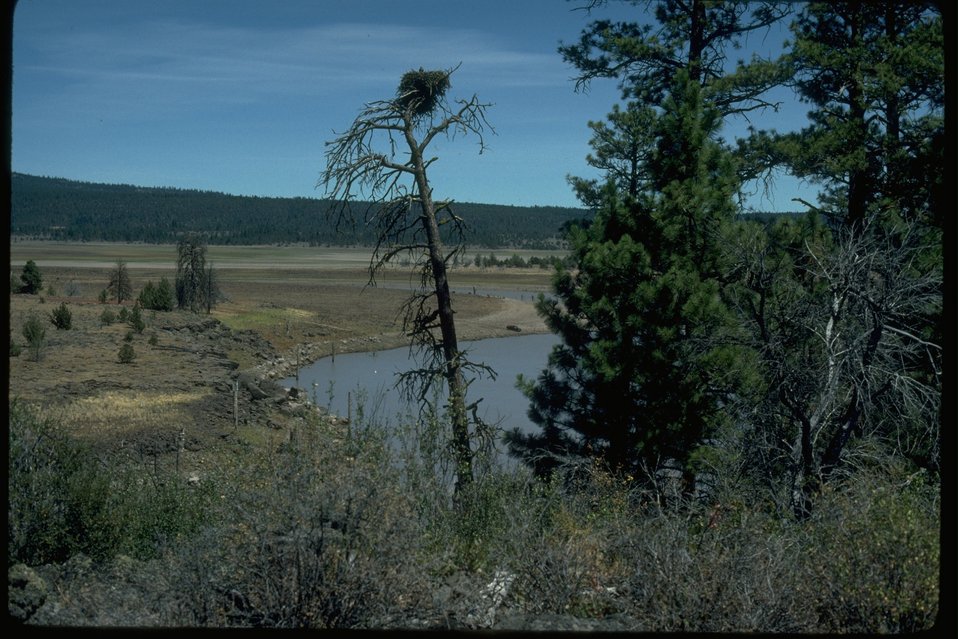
Osprey Nest at Gerber Reservoir.